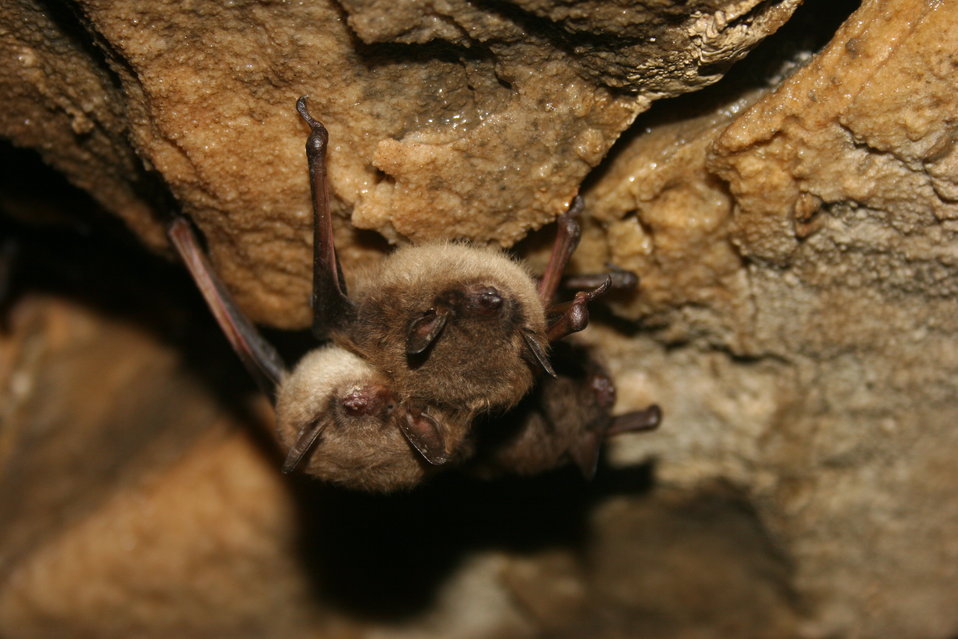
Healthy little brown bats in Mt. Aeolus Cave